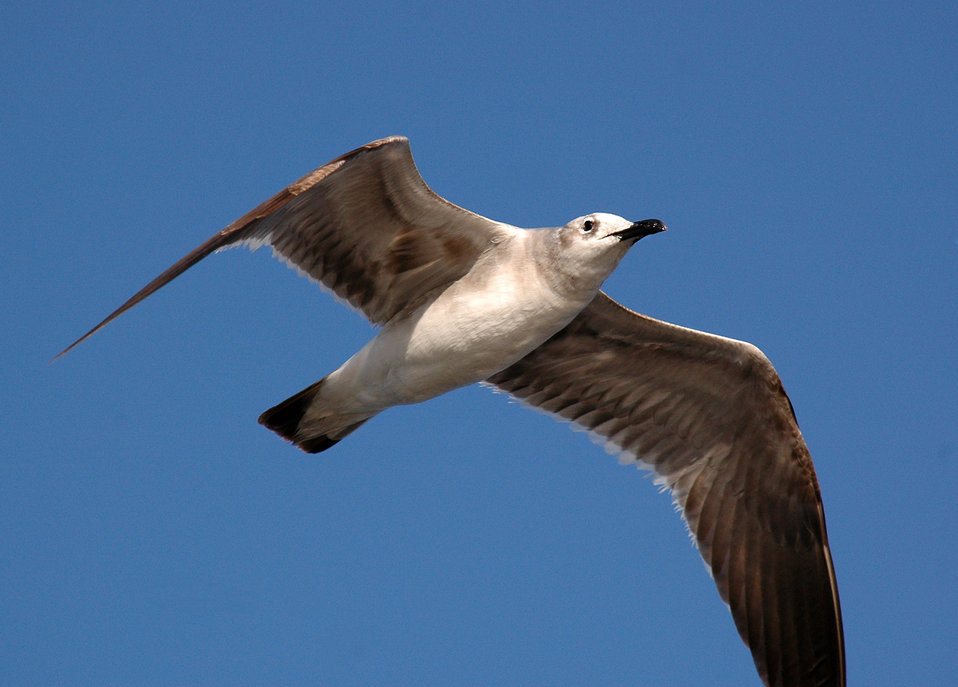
Seagull soaring

A seagull flying, photographed in florida..